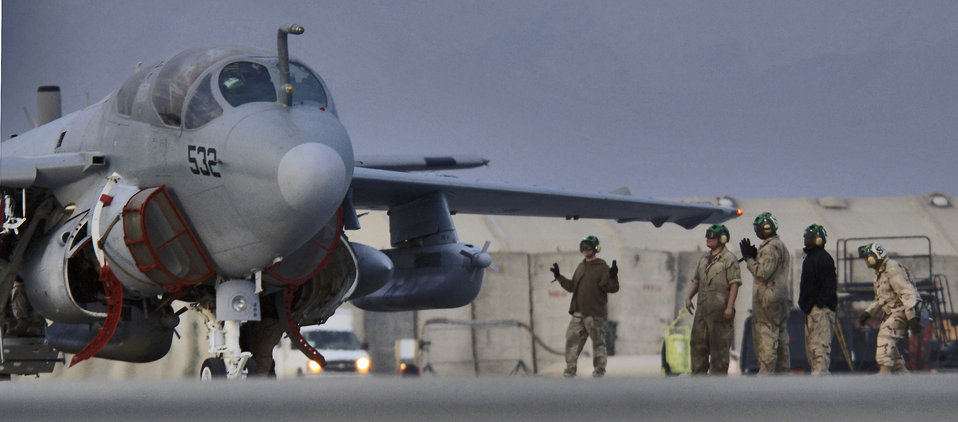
Sunrise sortie

EA-6B Prowler from Naval Air Station Whidbey Island, Wash., waits to launch Wednesday, March 8, 2006 for a dawn sortie from its deployed location at Bagram Air Base, Afghanistan. The squadron's mission is to dominate the enemy's electromagnetic spectrum through precise, lethal application of electronic attack.